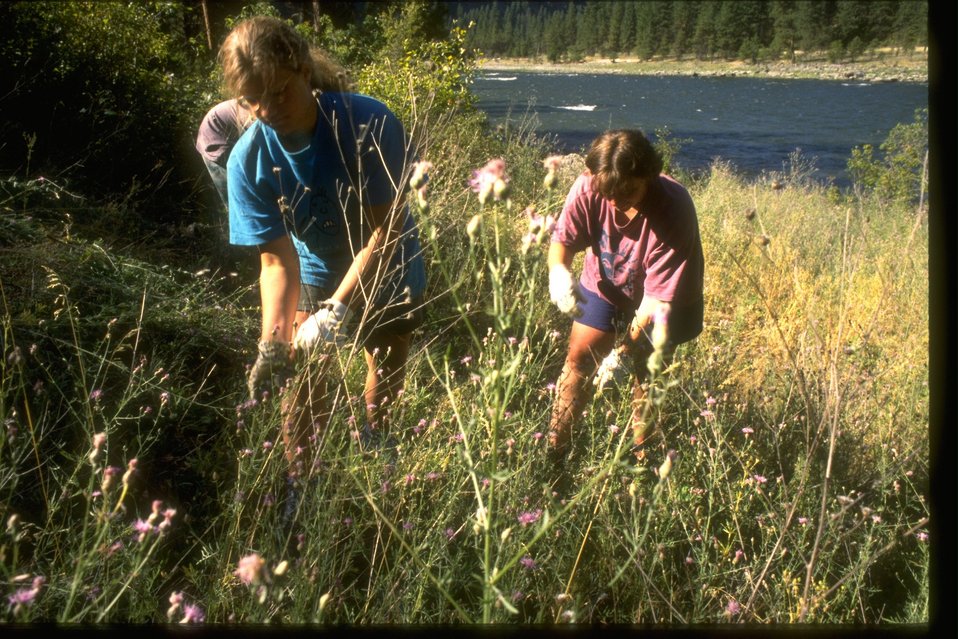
Boise High School students pulling knapweed along the Salmon River, Idaho.